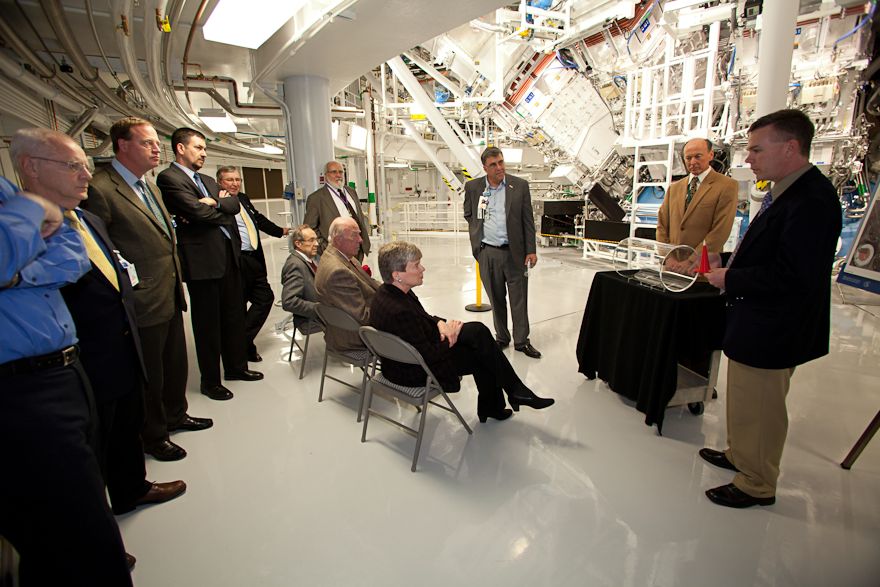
Acting Under Secretary Gottemoeller, Former Secretaries Schultz and Perry Visit the National Ignition Facility

Acting Under Secretary of State for Arms Control and International Security Rose Gottemoeller, Former Secretary of State George Schulz, and Former Secretary of Defense William Perry tour the National Ignition Facility at the Lawrence Livermore National Laboratory in Livermore, California, on February 8, 2012. [Lawrence Livermore National Laboratory by Jacqueline McBride]